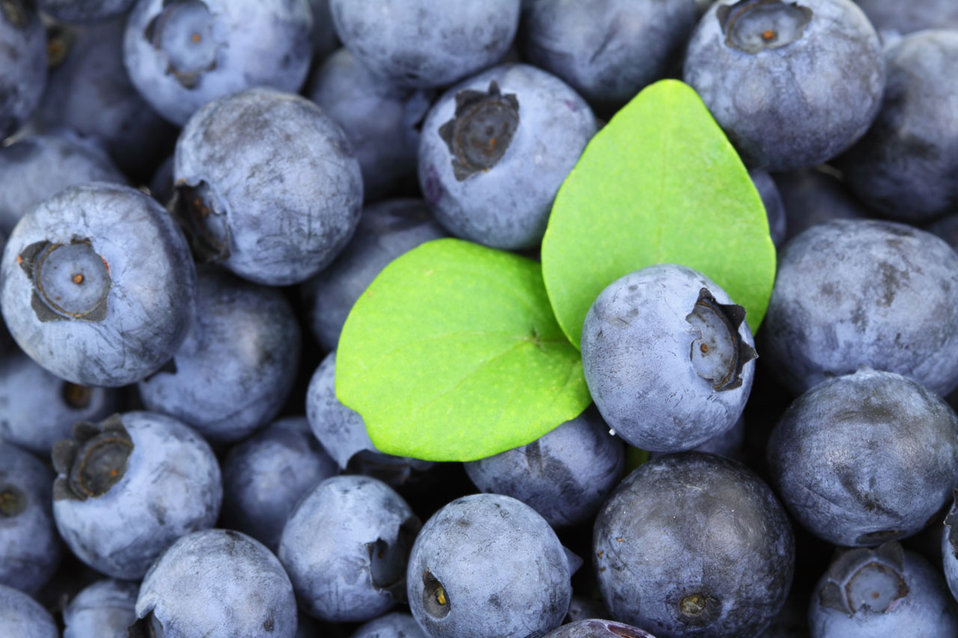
Blueberry background with green leaves.